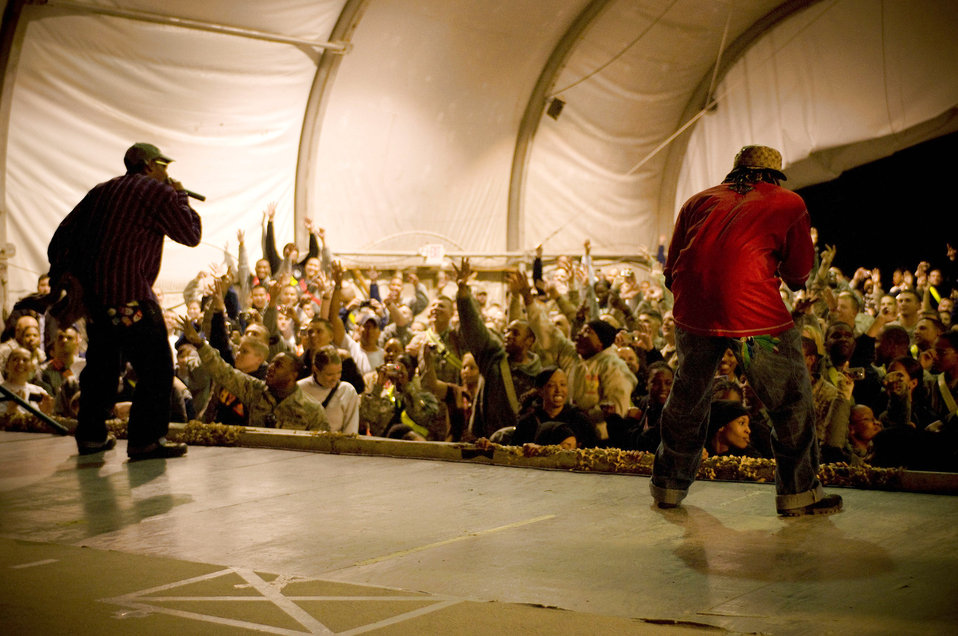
Around the world in 8 days

Kaine and D-Roc of the rap group Yin Yang Twins perform Nov. 13 at Bagram Airfield, Afghanistan. The Yin Yang Twins were part of the USO Tour entitled